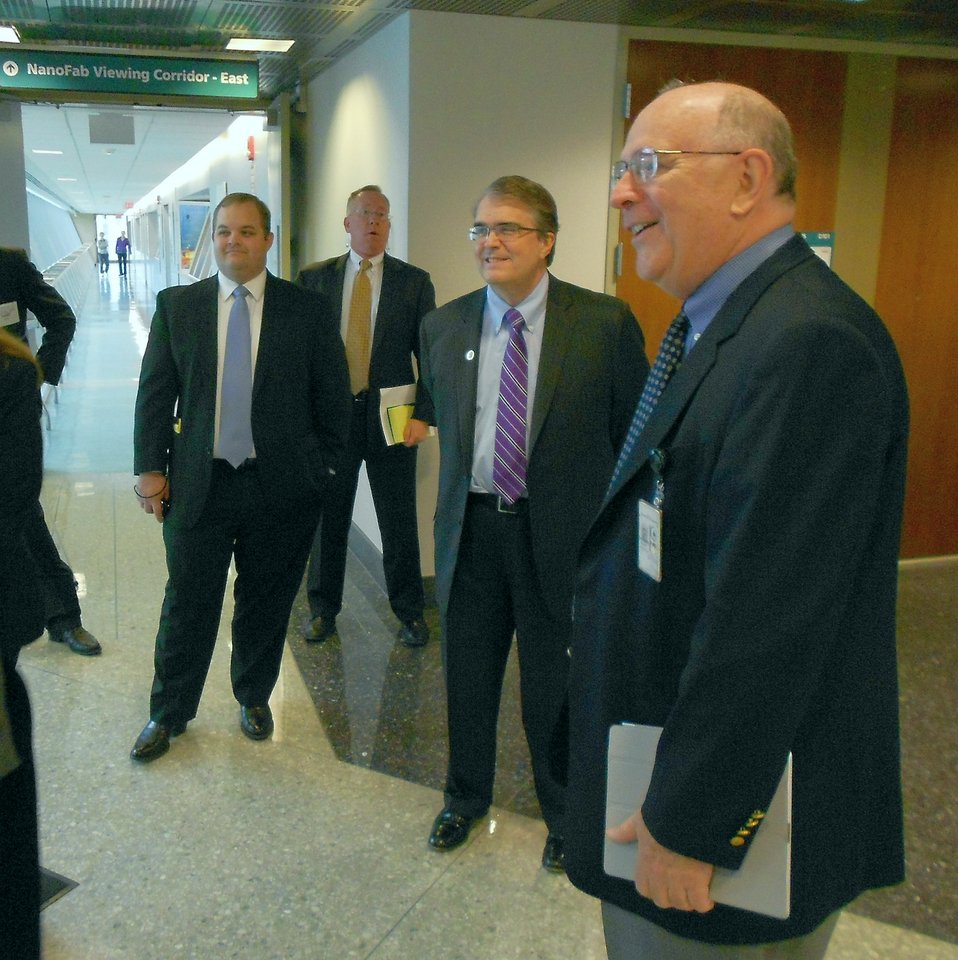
U.S. Representative Culberson Visit

NIST Center for Nanoscale Science and Technology (CNST) Robert Celotta (right) and Office of Congressional and Legislative Director Jim Schufreider (center background) welcome U.S. Representative John Culberson of Texas (center right) and Senior Legislative Assistant Robert LaBranche (center left) to a tour of the CNST.